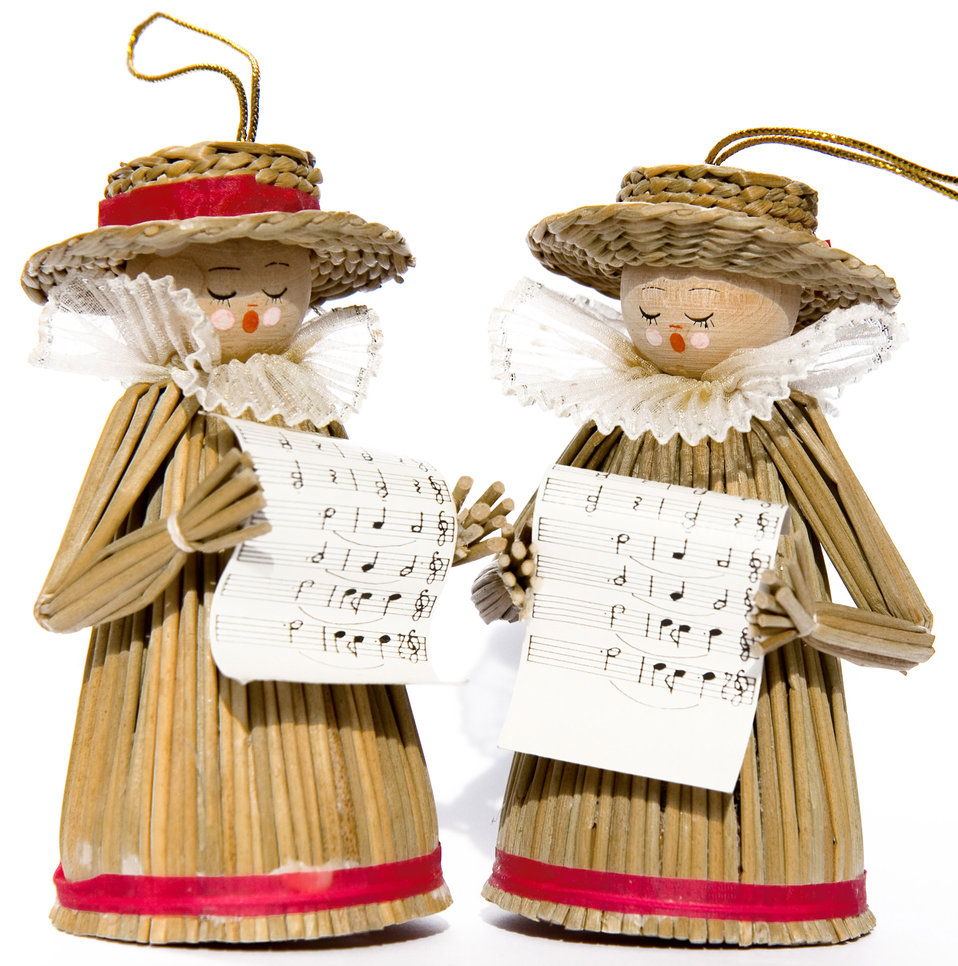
Carol singers made of straw.